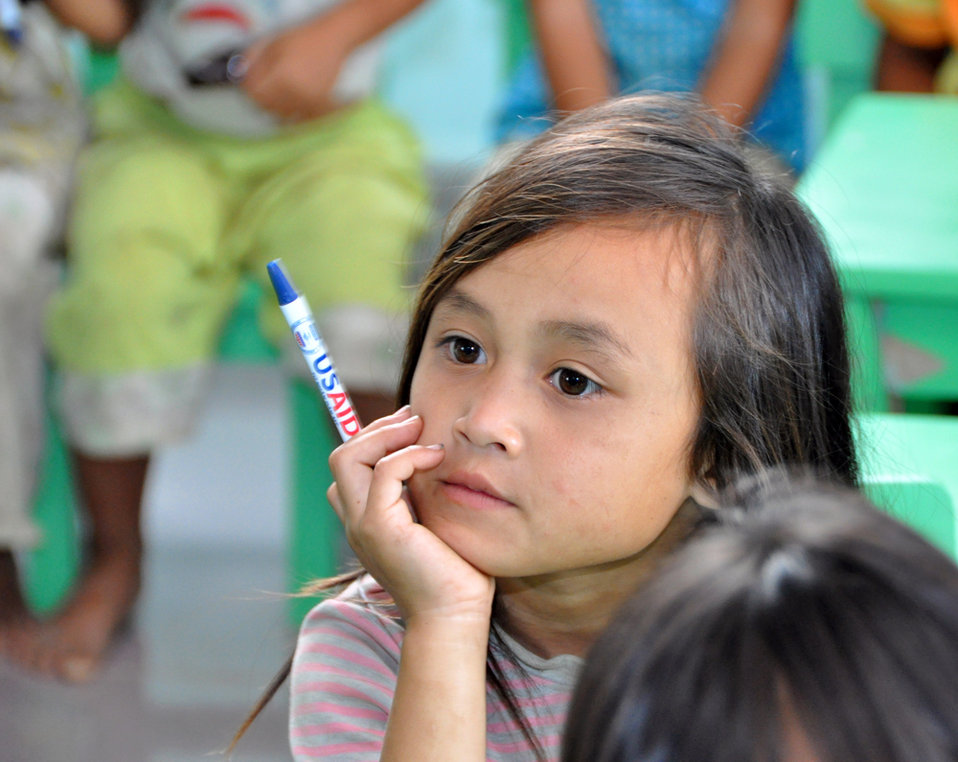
USAID contributes to refurbished pre-schools and teacher training in Vietnam